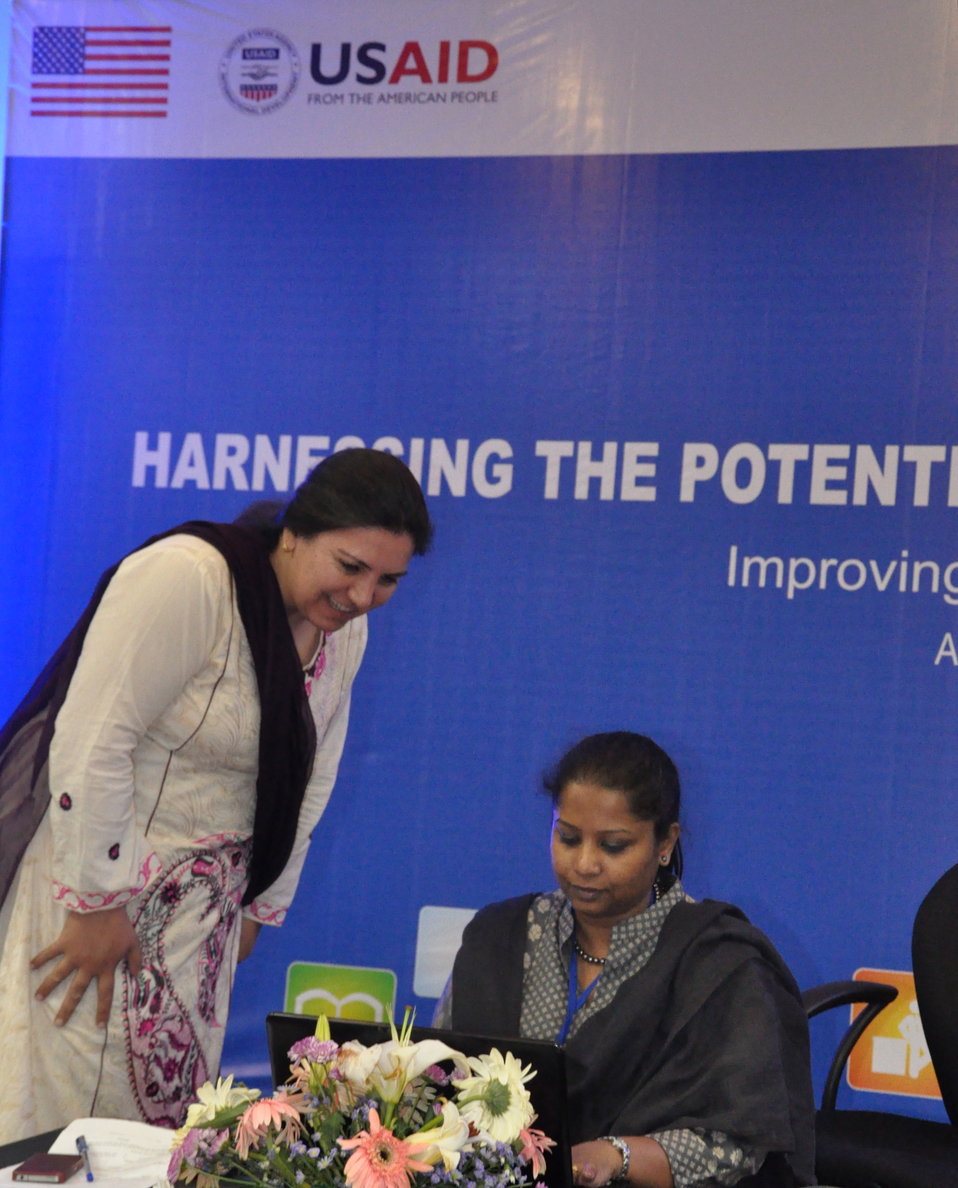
Delegate from India Sujatha Muthayya reviews her presentation before the session starts